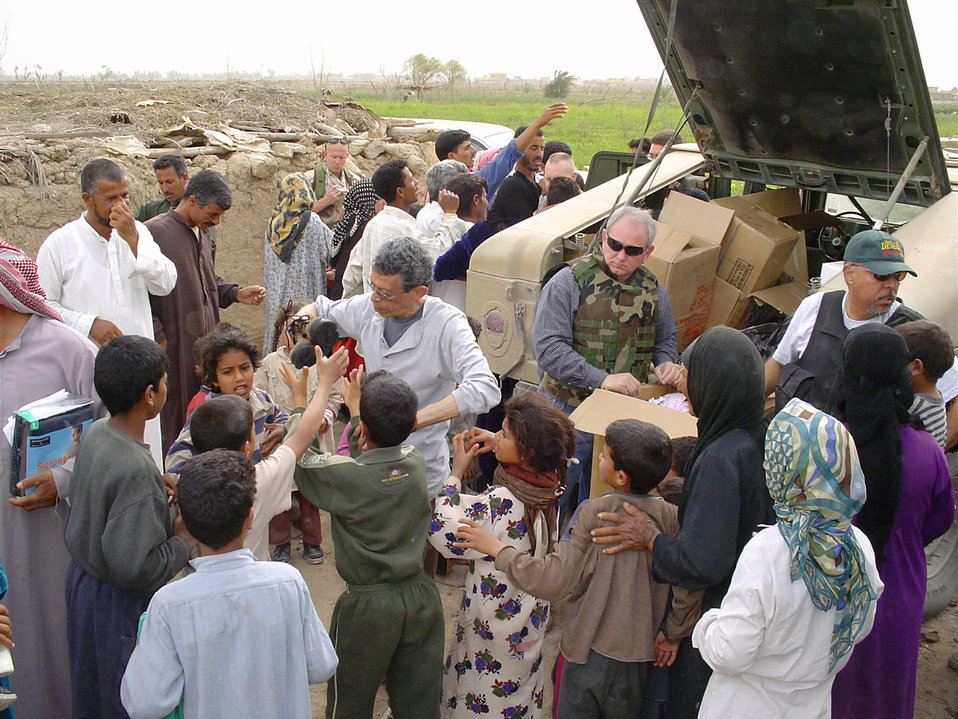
Iraq, Operation Iraqi Freedom, Humanitarian

VEDGHA, Iraq - Chaplain (Lt. Col.) Rich Hall (wearing the flack vest) hands out clothing, shoes, food and toys during a humanitarian relief mission here recently. Members of the 447th Air Expeditionary Group's chaplaincy, Air Force Office of Special Investigations, medical and security forces squadron's assisted with the mission.